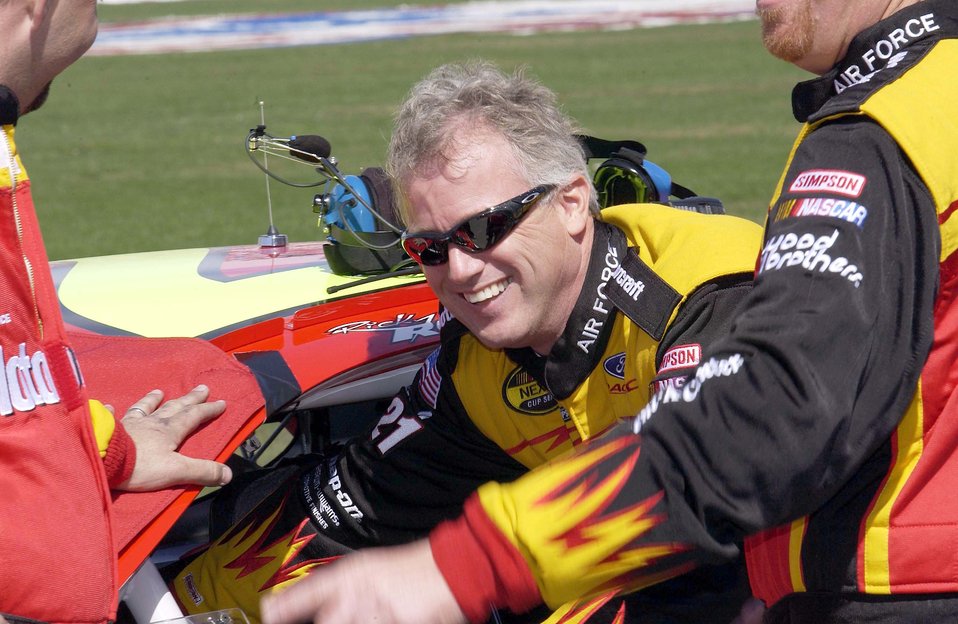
Air Force NASCAR team revs up for 2005

LAS VEGAS -- Ricky Rudd, driver of the No. 21 Motorcraft/Air Force race car, prepares for the start of a race at the speedway here. The 2005 NASCAR season kicks off Feb. 20 with the Daytona 500.